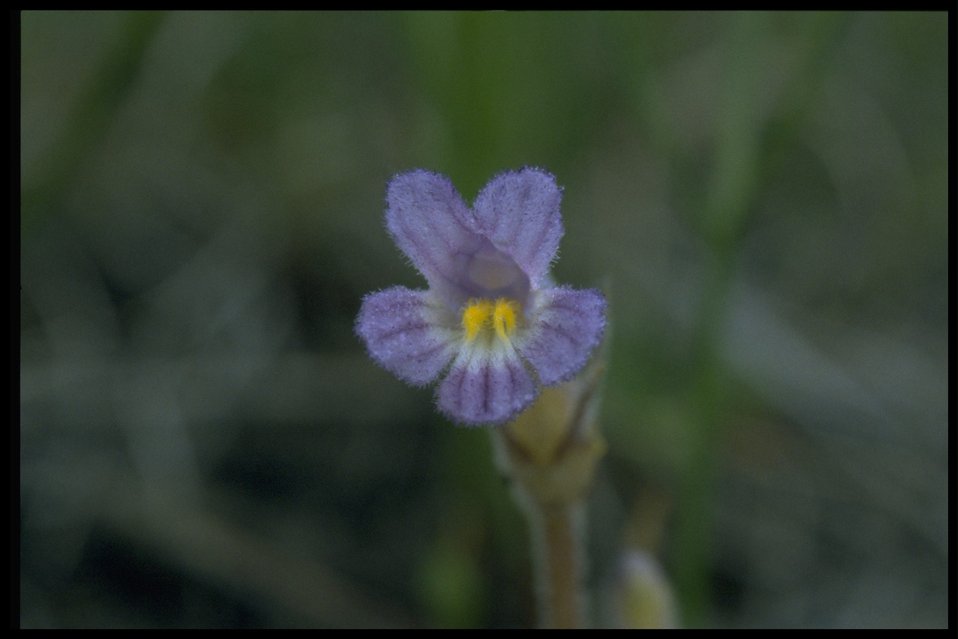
Closeup shot of oneflowered broomrape (Orobanche uniflora).